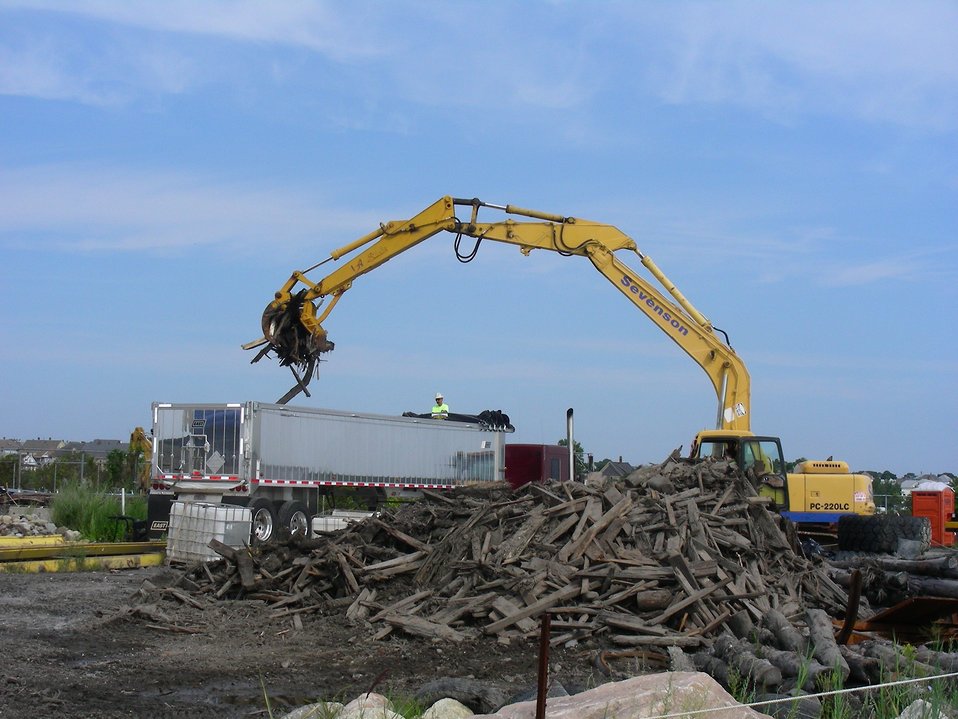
August 2012, What's at the bottom of a harbor near you?

Here, wood debris is among the many things cleaned up in New Bedford Harbor, in addition to the PCBs. From old dock pieces to oyster shells, those 'larger' items need to be removed before the PCB-contaminated sediment to avoid blockages and disruptions to the dredge pipeline. This wood likely came from abandoned pier and dock structures in the upper harbor that were not of historical value.